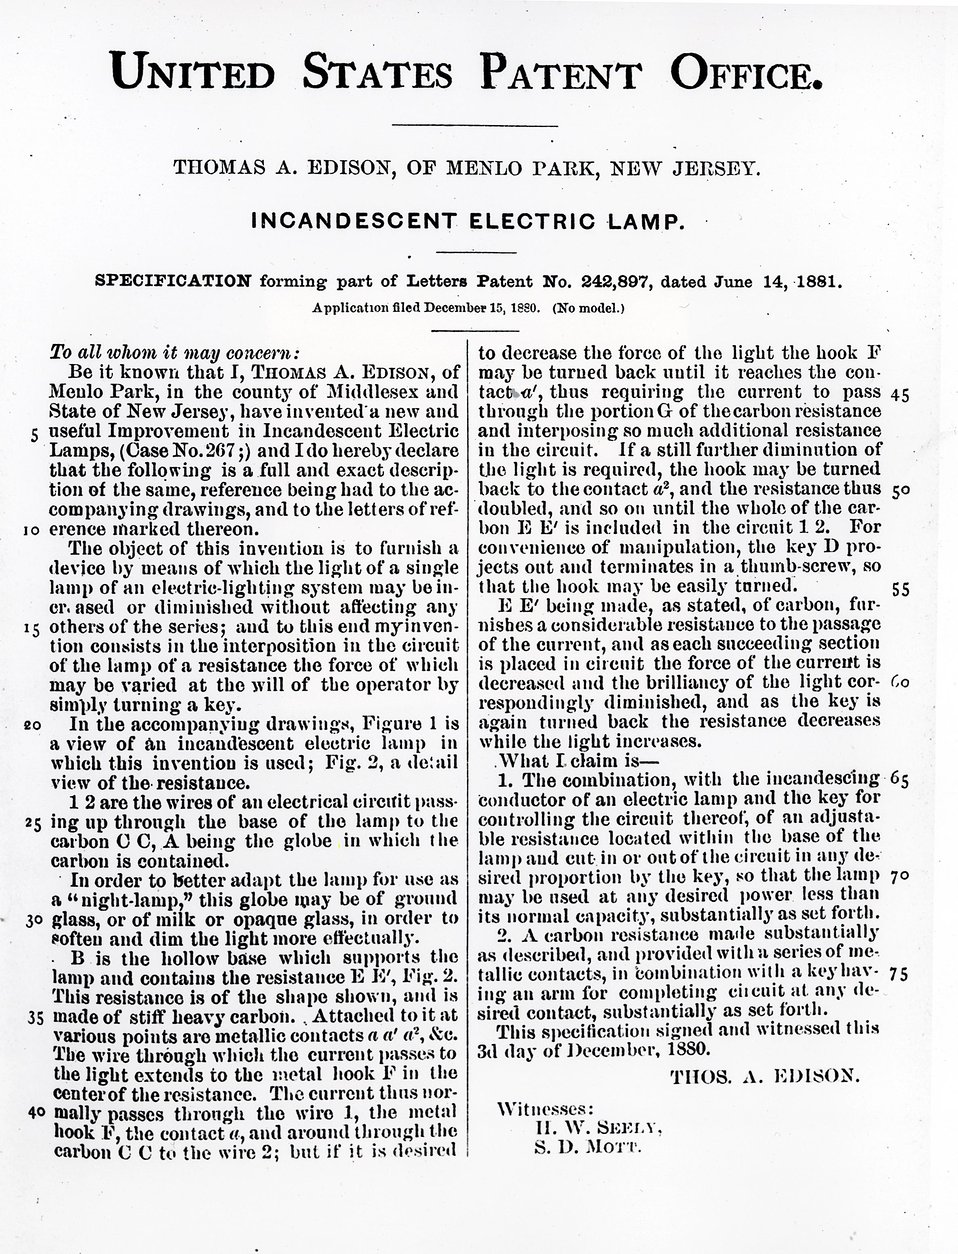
Patent specification for Edison's Incandescent electric lamp.